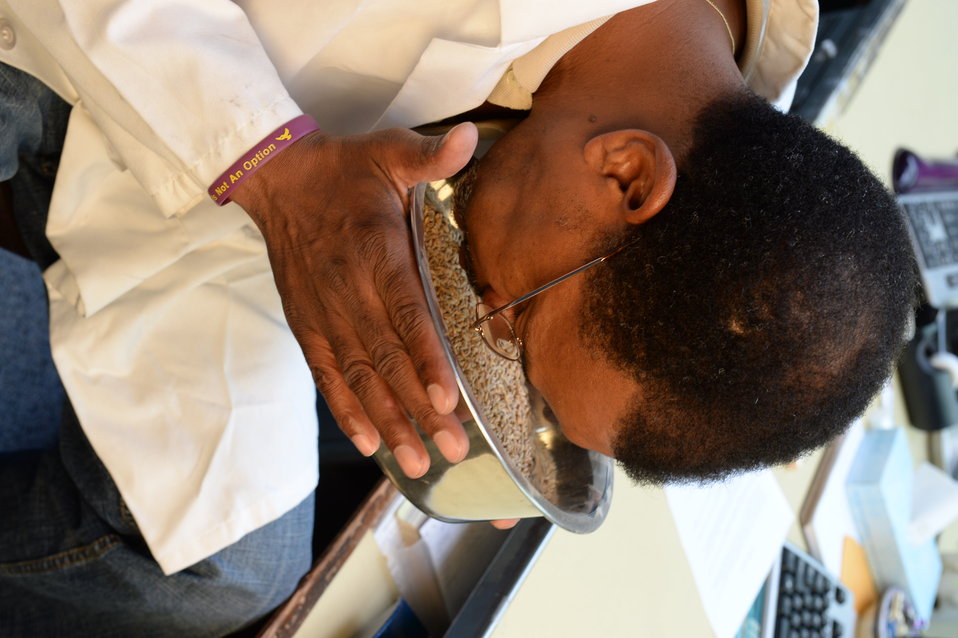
A U.S. Department of Agriculture (USDA) Grain Inspection, Packers and Stockyards Administration (GIPSA) Federal Grain Inspection Service (FGIS) scientist sniffs at a wheat sample as part of the testing process for wheat at the FGIS inspection laboratory in New Orleans, LA on Monday, Nov. 18, 2013.